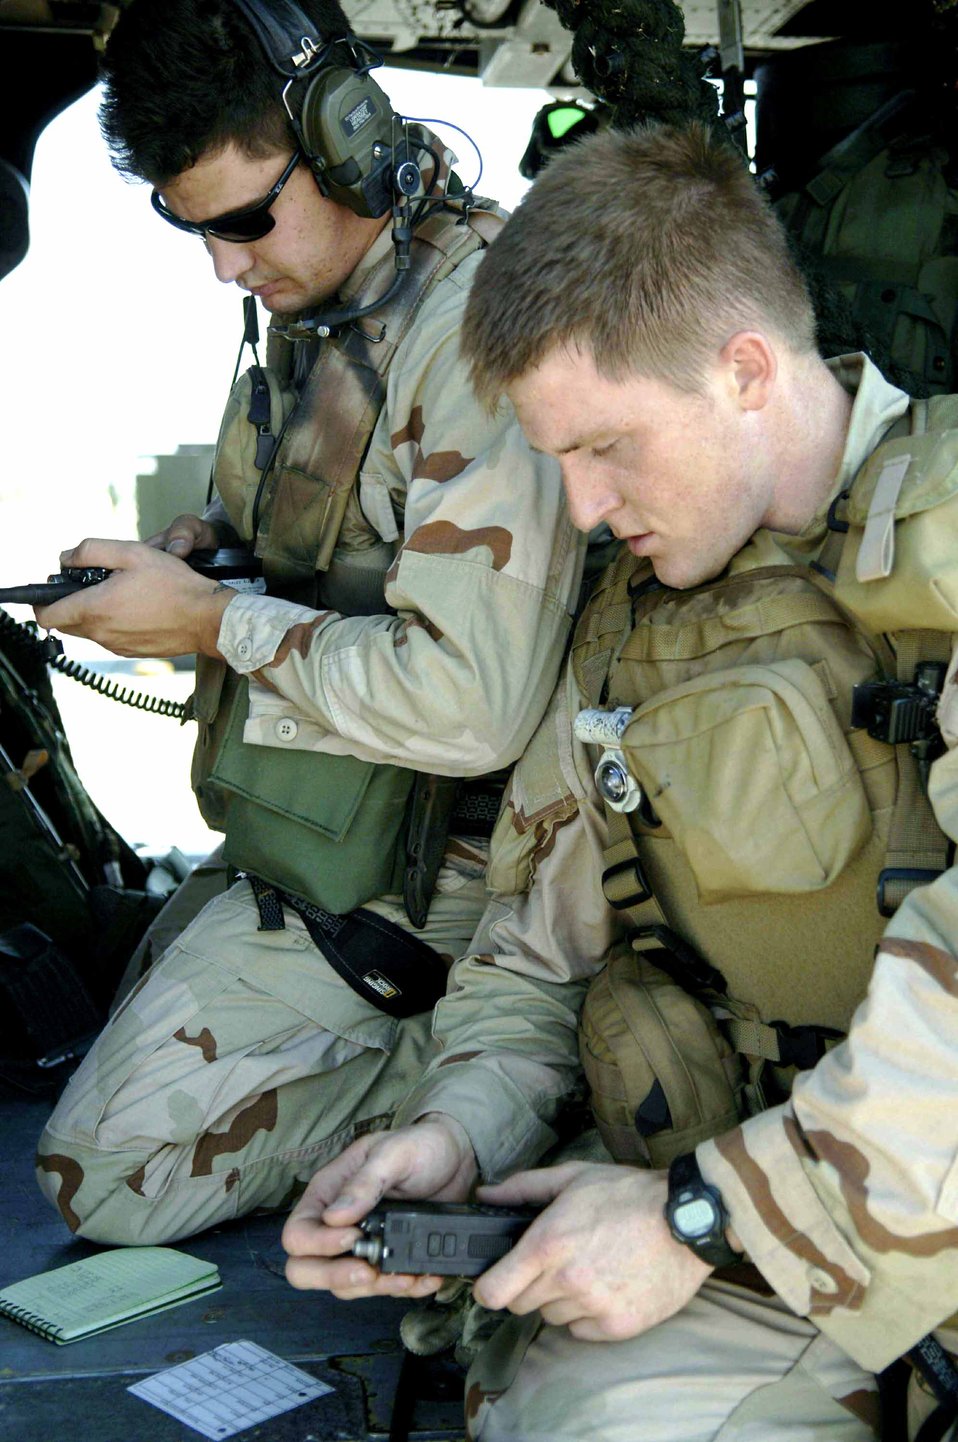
Angel Thunder

Staff Sgt. Ivan Eggel (left) and Senior Airman Troy Patrick sync their radios before taking off in an HH-60 Pave Hawk from the 305th Rescue Squadron. They were headed to Gila Bend, Ariz., on July 25 for rescue training as part of Exercise Angel Thunder. The five-day exercise, held at Davis-Monthan Air Force Base, Ariz., and other areas is designed to provide realistic combat search and rescue training for active-duty, Reserve and Guard Airmen in combat rescue forces. Sergeant Eggel and Airman Patrick are pararescuemen with the 48th Rescue Squadron.